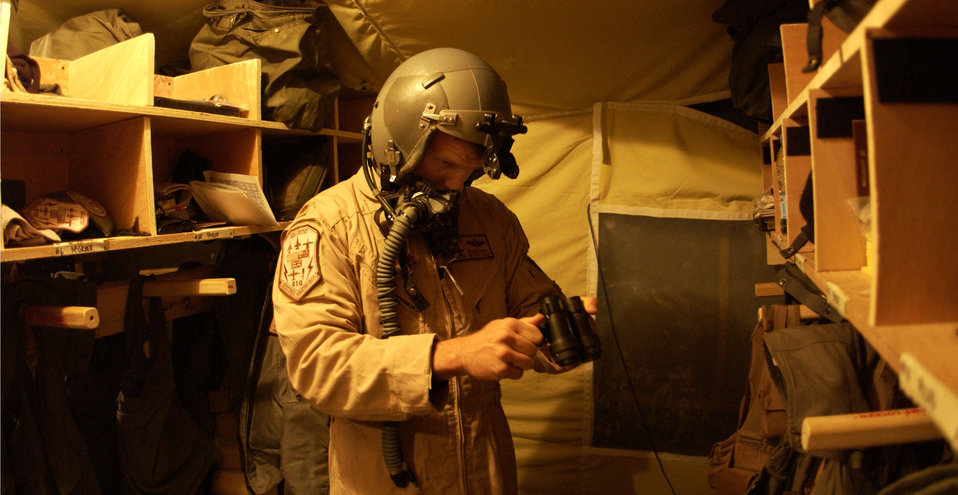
Eye spy

OPERATION IRAQI FREEDOM -- An F-16 Fighting Falcon pilot checks out his night vision goggles prior to a mission. The airman is from the 410th Air Expeditionary Wing at a forward-deployed location supporting Operation Iraqi Freedom.